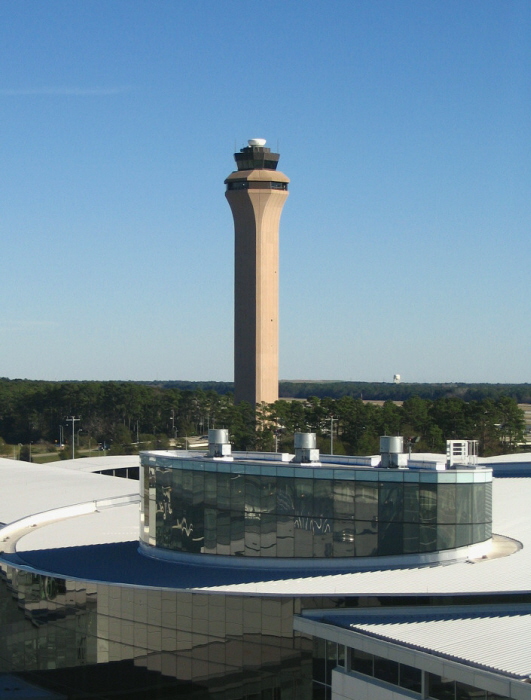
Photo By: Daniel2986 16:14, 16 January 2007 (UTC) George Bush Intercontinental Airport